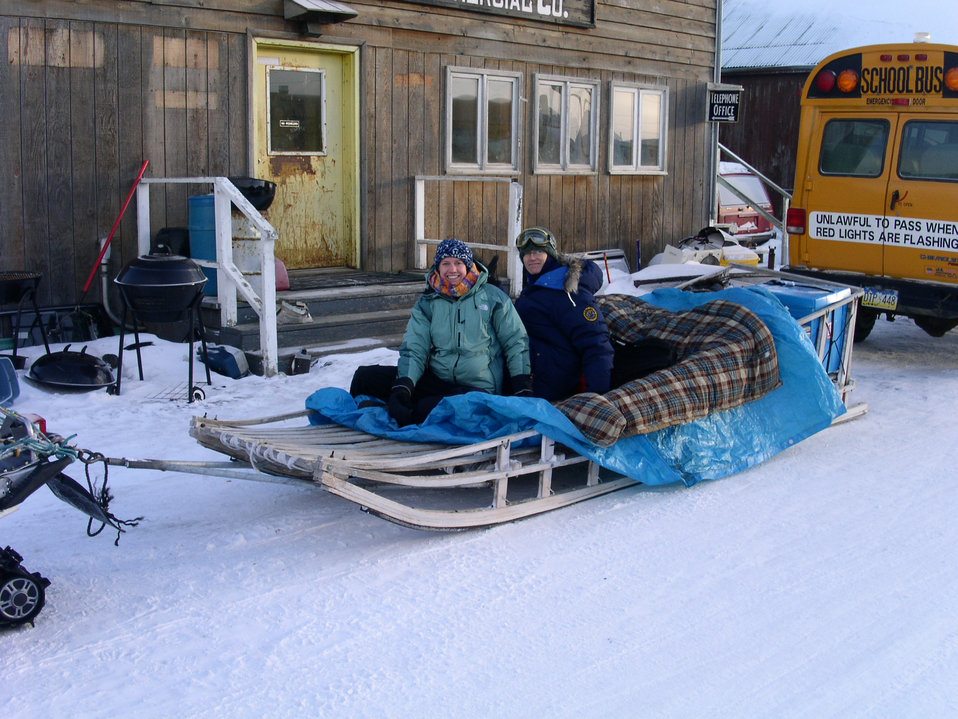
Laura Hammitt, M.D. (left), and Kim Boyd Hummel, R.N., B.S.N. (right) were photographed here in 2005, prior to getting on their way to the remote Native Alaska village of Teller, Alaska, in order to investigate an outbreak of invasive Haemophilus influenzae serotype b (Hib) meningitis.